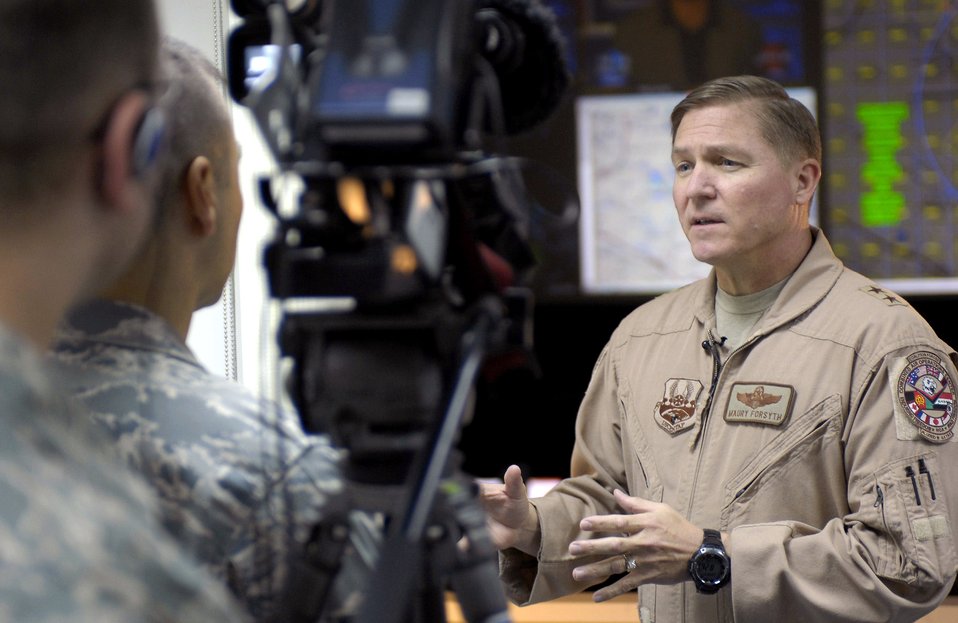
DCFACC talks airpower, Airmen

Maj. Gen. Maury Forsyth is interviewed at the Combined Air and Space Operations Center, Southwest Asia, on the importance of airpower in the U.S. Central Command's area of responsibility.